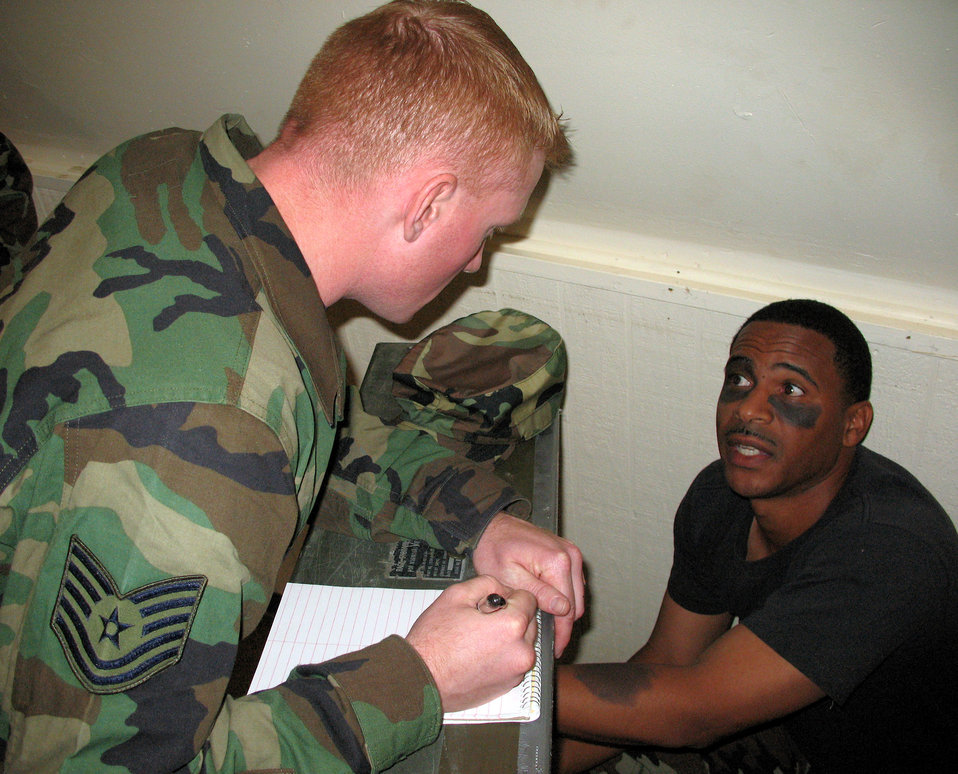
PACAF legal teams train to deploy

Tech. Sgt. Lee Feldhausen, a paralegal with the Air Force Reserve Command, listens to Tech. Sgt. Charlie Alston, a paralegal with the 15th Airlift Wing legal office at Hickam Air Force Base, Hawaii, during a training scenario Dec. 10 at the Pacific Joint Operations Legal Exercise, or PACJOLE, held at the Pohakuloa Training Area on the island of Hawaii. Sgt. Alston role playing an Airman beaten and detained by local nationals in a foreign country. A team of 24 military lawyers and paralegals from all over the Pacific theater deployed to the training area for the PACAF exercise.